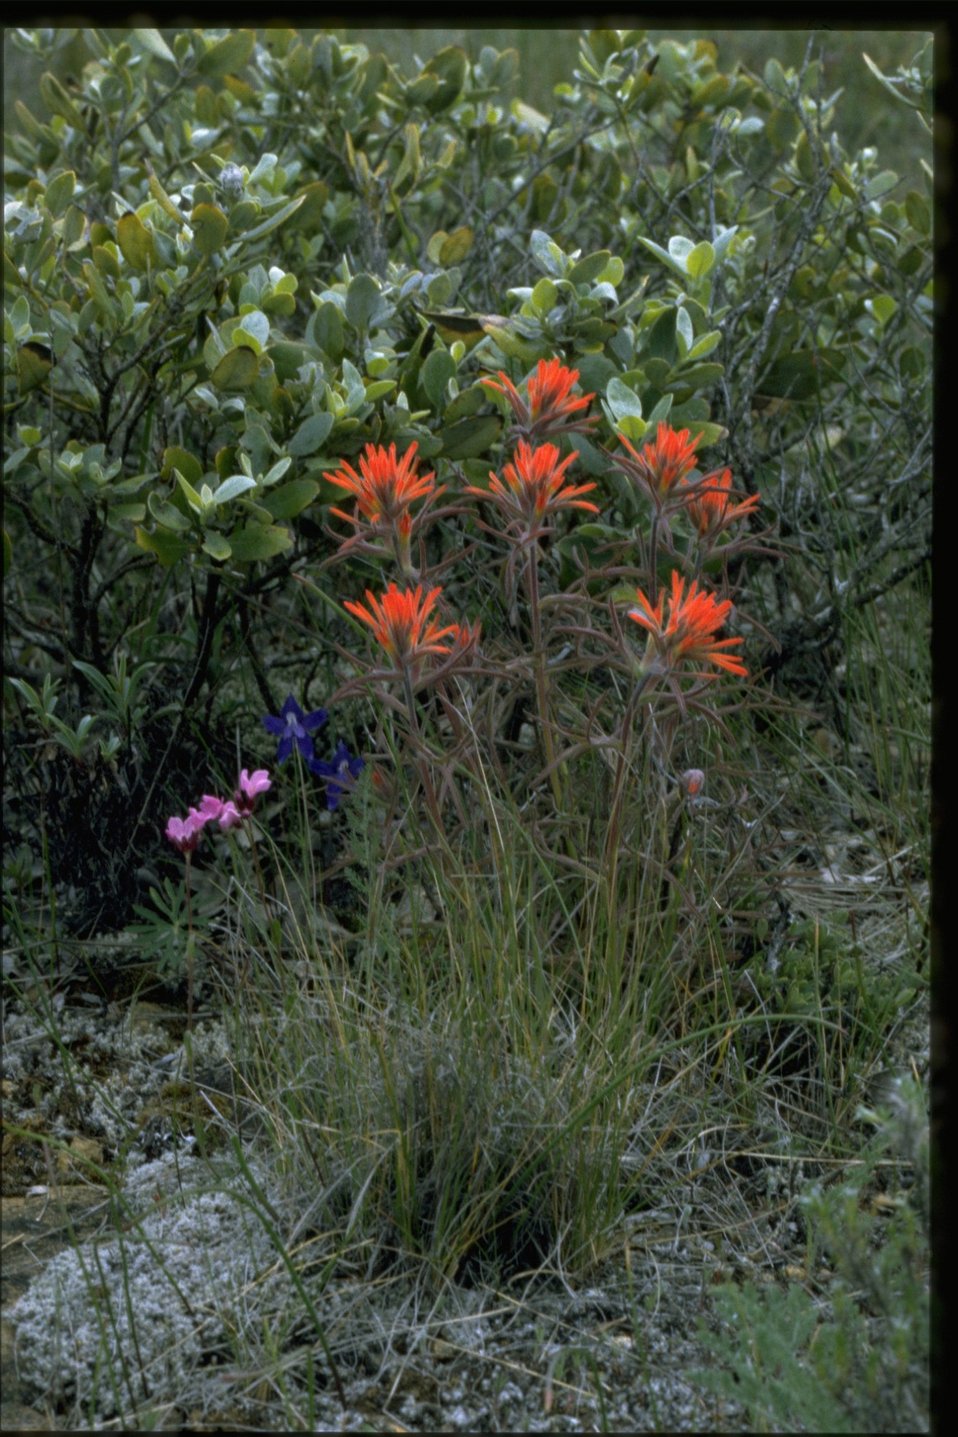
Farshot of Castilleja with Arabis.